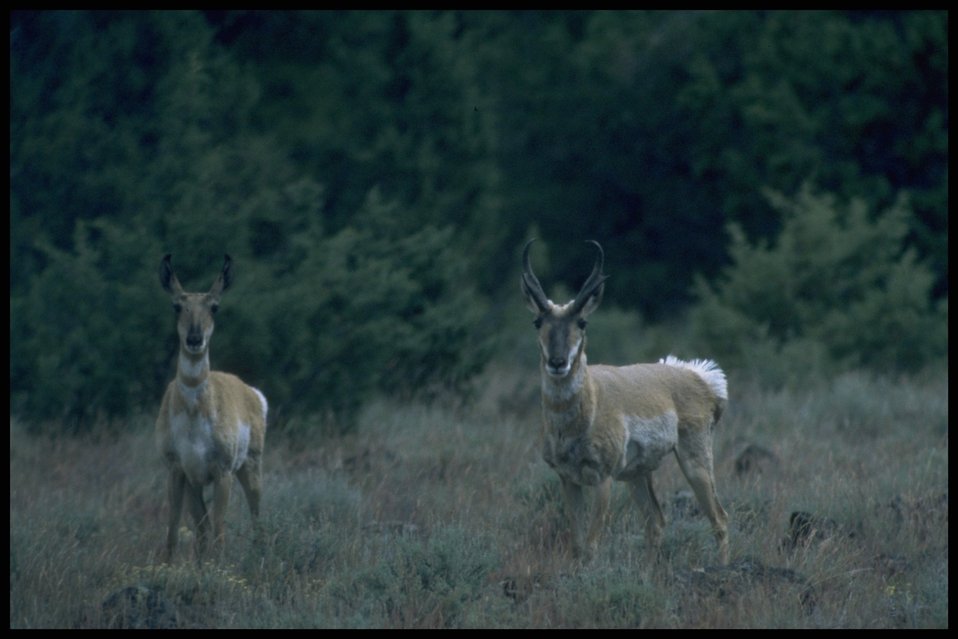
Antelopes on alert, Lakeview District.